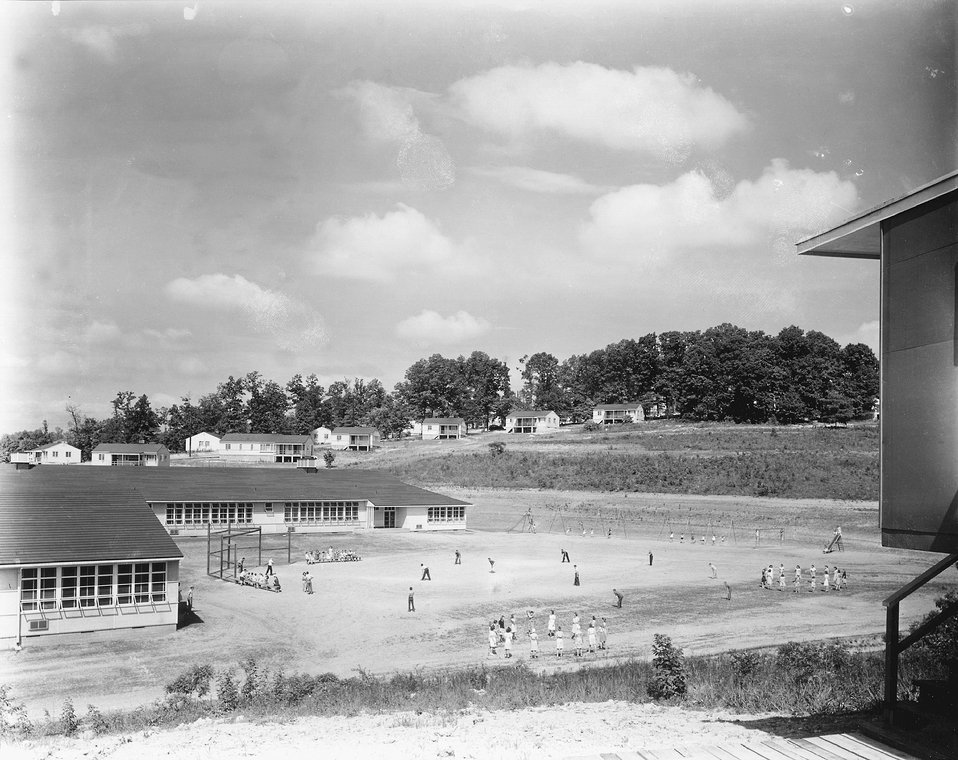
MED school and homes. c. 1944